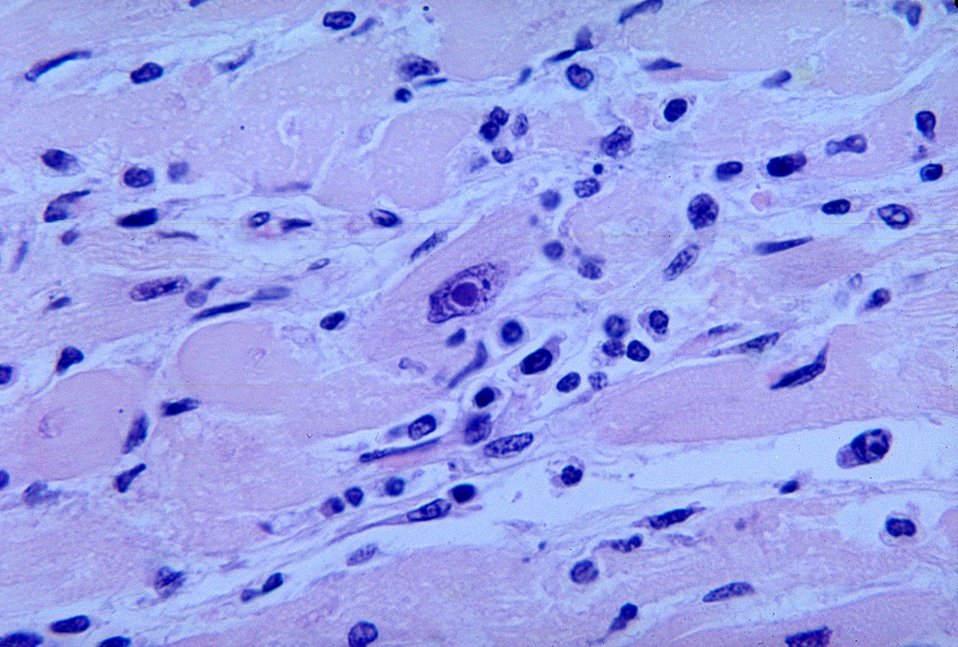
This micrograph reveals an intranuclear inclusion body in a heart section from a patient with diphtheria-related myocarditis.